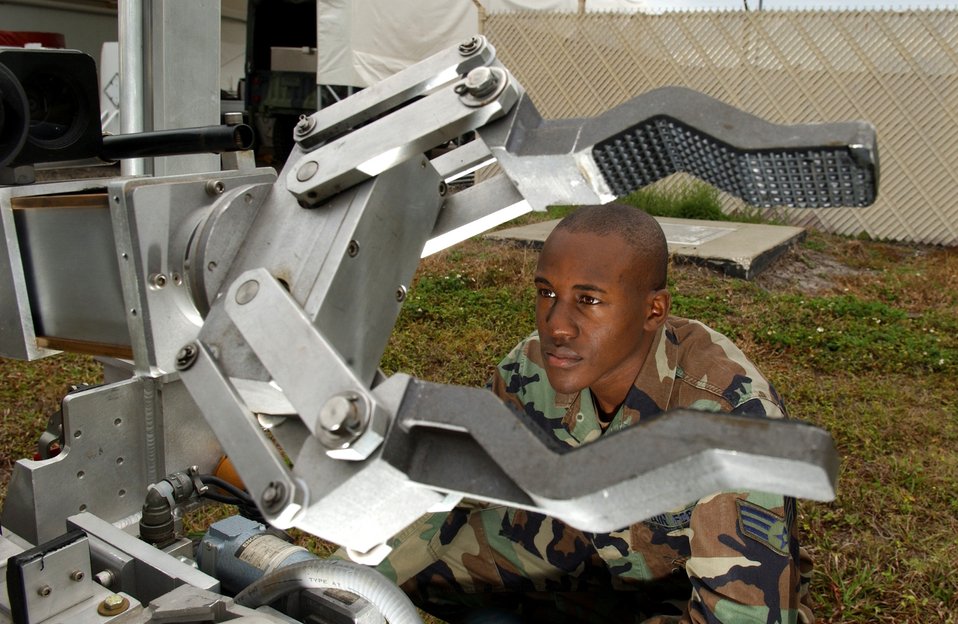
Robot work

MACDILL AIR FORCE BASE, Fla. (AFPN) -- Senior Airman Wayne Howell does a preventive maintenance inspection here on a remote operated neutralization system Jan. 30. The system is used to retrieve explosive devices. Airman Howell is an explosive ordnance disposal technician with the 6th Civil Engineer Squadron.